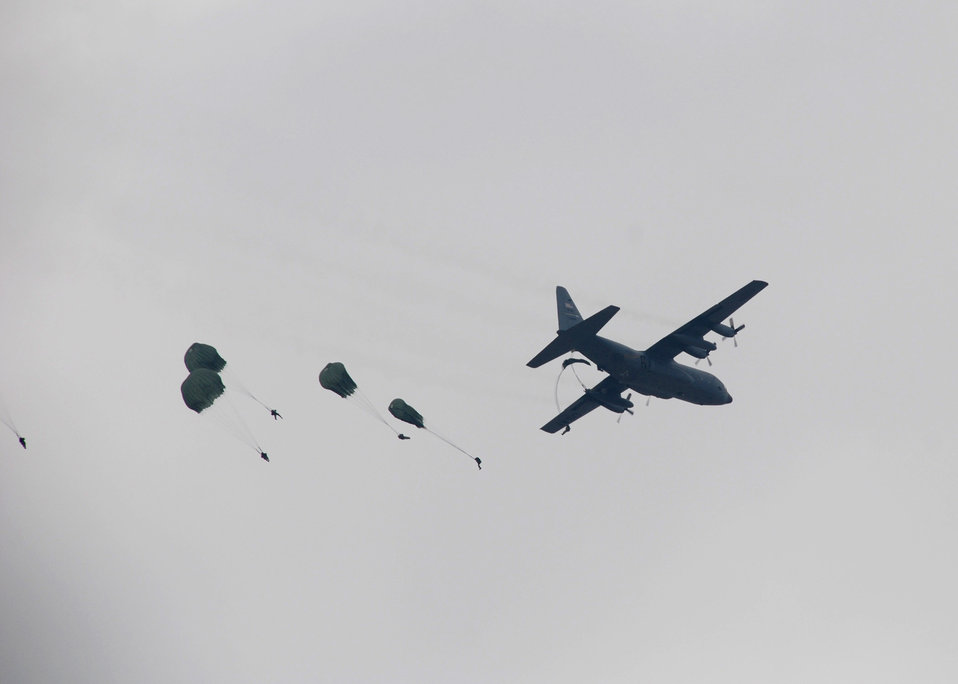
Operation Toy Drop brings international, U.S. military together

An Air Force Reserve Command C-130 Hercules flown by members of the 95th Airlift Squadron, from Pope Air Force Base, N.C., drops paratroopers during Operation Toy Drop Dec. 8 at the Sicily Drop Zone at Fort Bragg, N.C. More than 1,050 paratroopers jumped during the exercise.